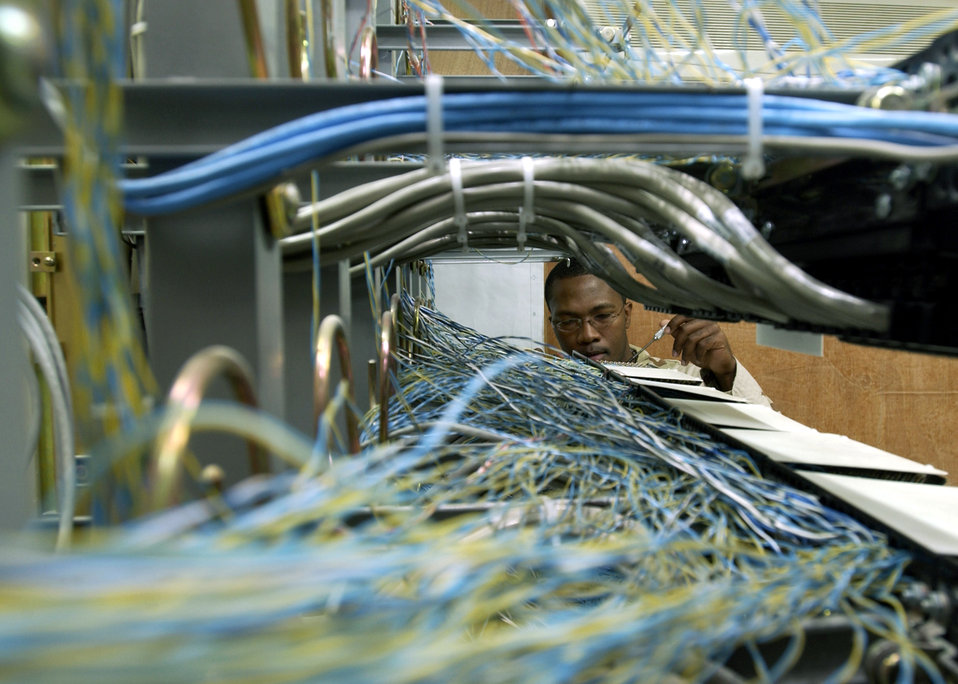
Crossing lines

SOUTHWEST ASIA -- Staff Sgt. Faniko Brown maintains a telephone connection at a forward-deployed location. Sergeant Brown is assigned to the 379th Expeditionary Communications Squadron and is deployed from Eglin Air Force Base, Fla.